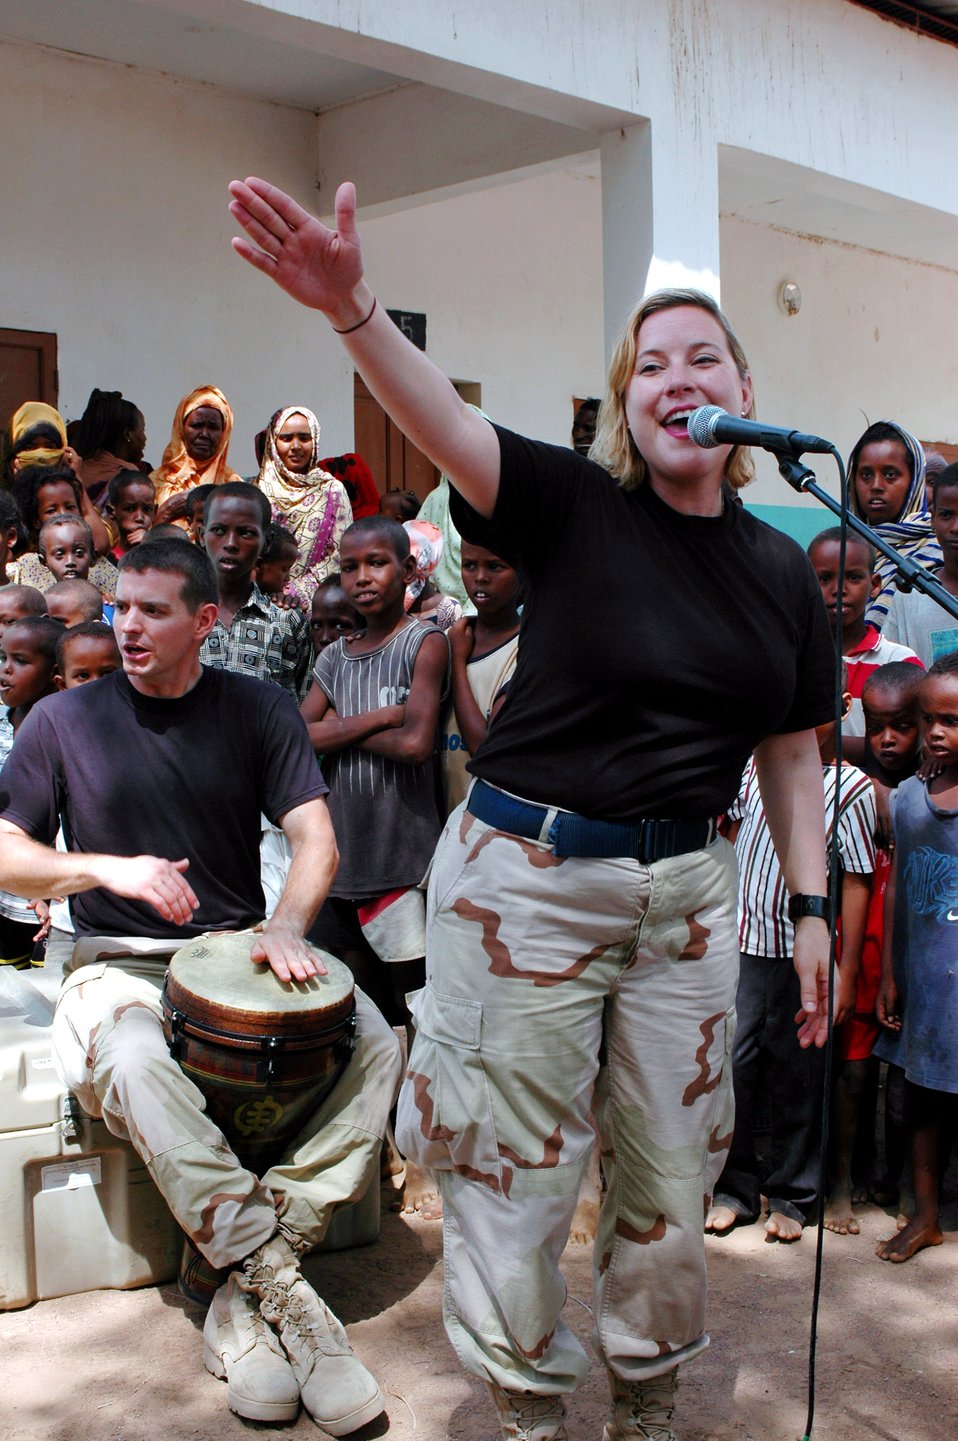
Rock band reaches out to Djiboutian villages

U.S. Central Command Air Forces band members Tech. Sgt. Shonda Winkler and Staff Sgt. James Doyle of